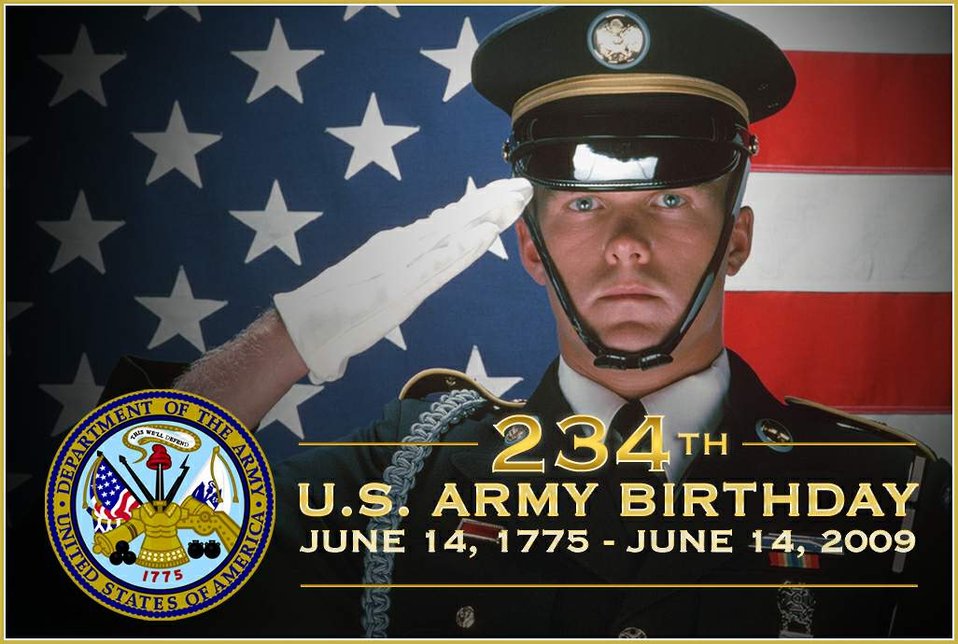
Happy Birthday, U.S. Army

On behalf of all Airmen, Air Force leaders wish all members of the U.S. Army a very happy birthday.